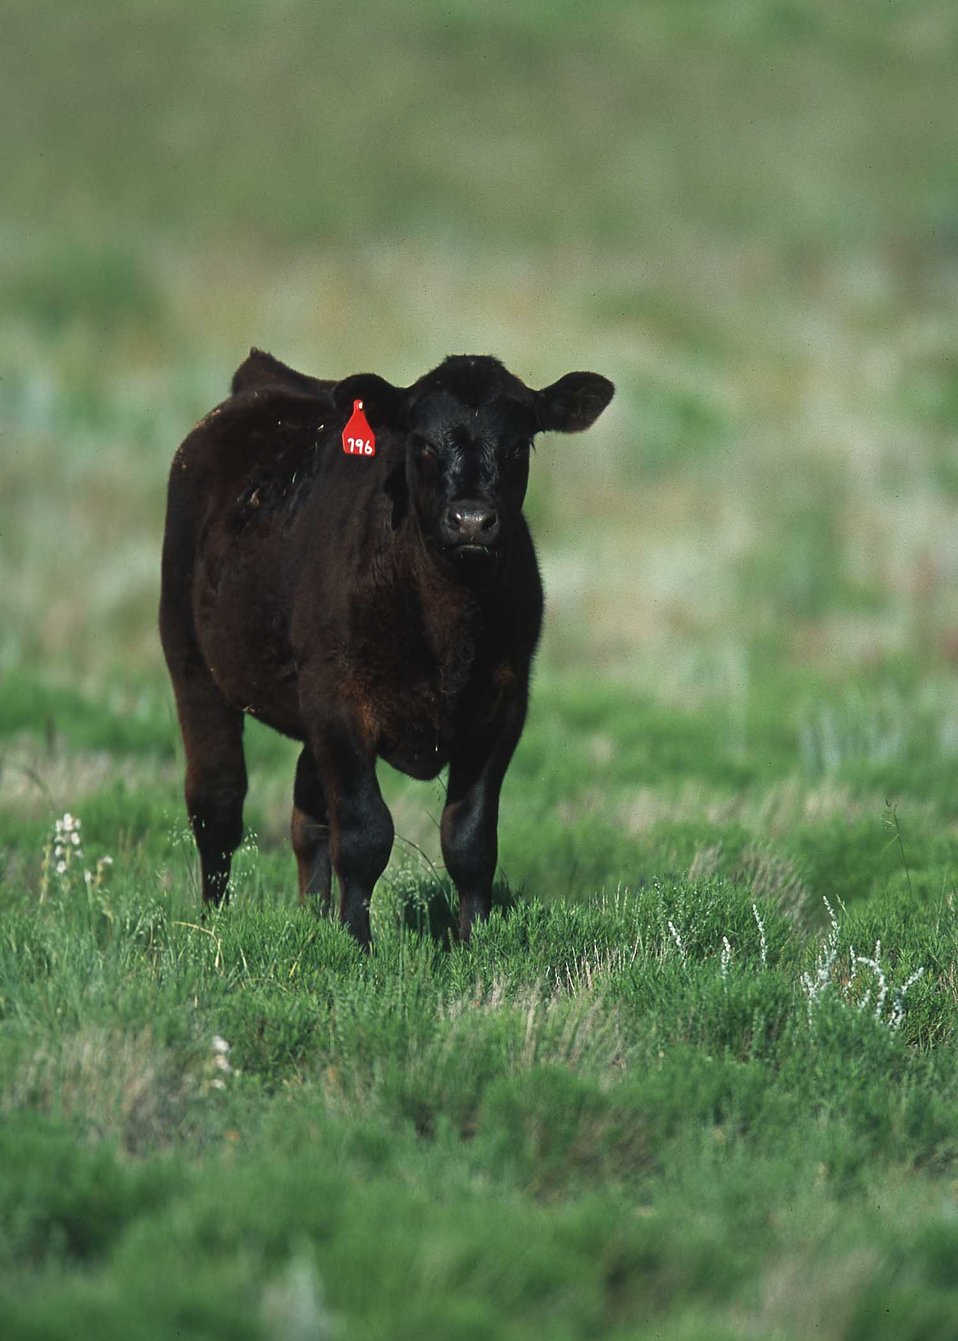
Angus Calf on FT Ranch.